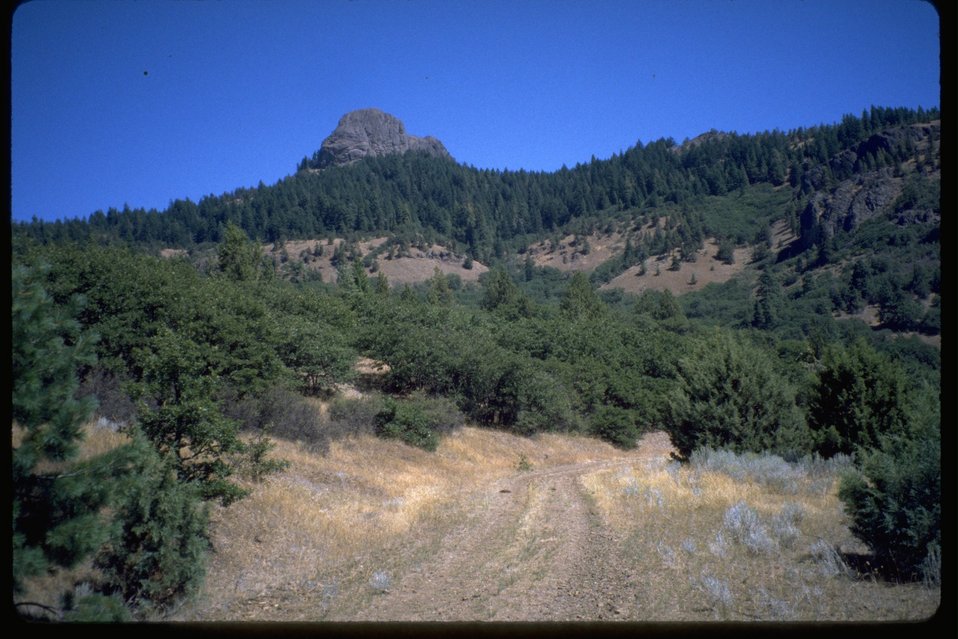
Area of Critical Environmental Concern and Pilot Rock.